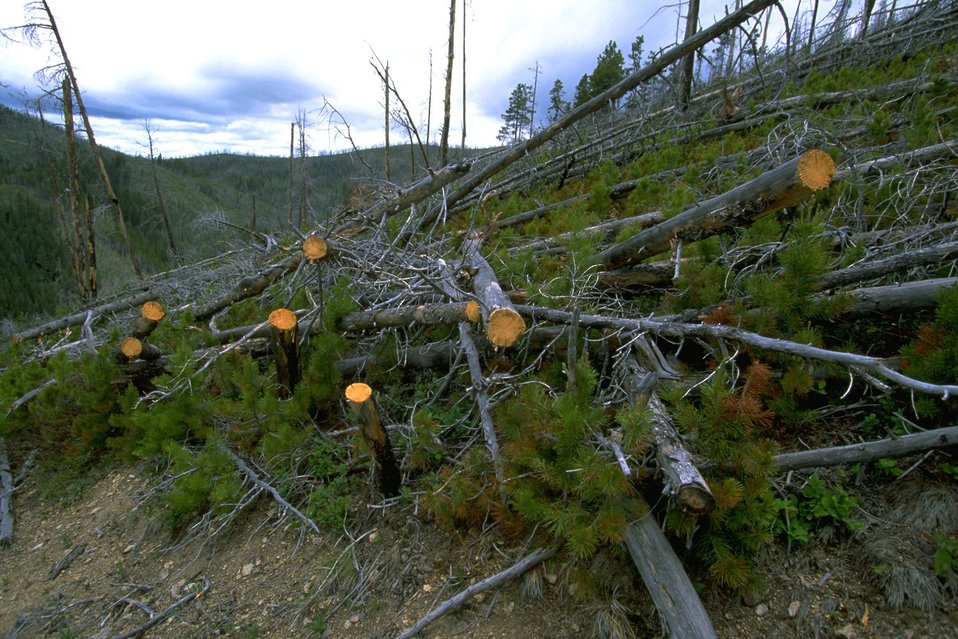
Cut wood in the Judith Mountains